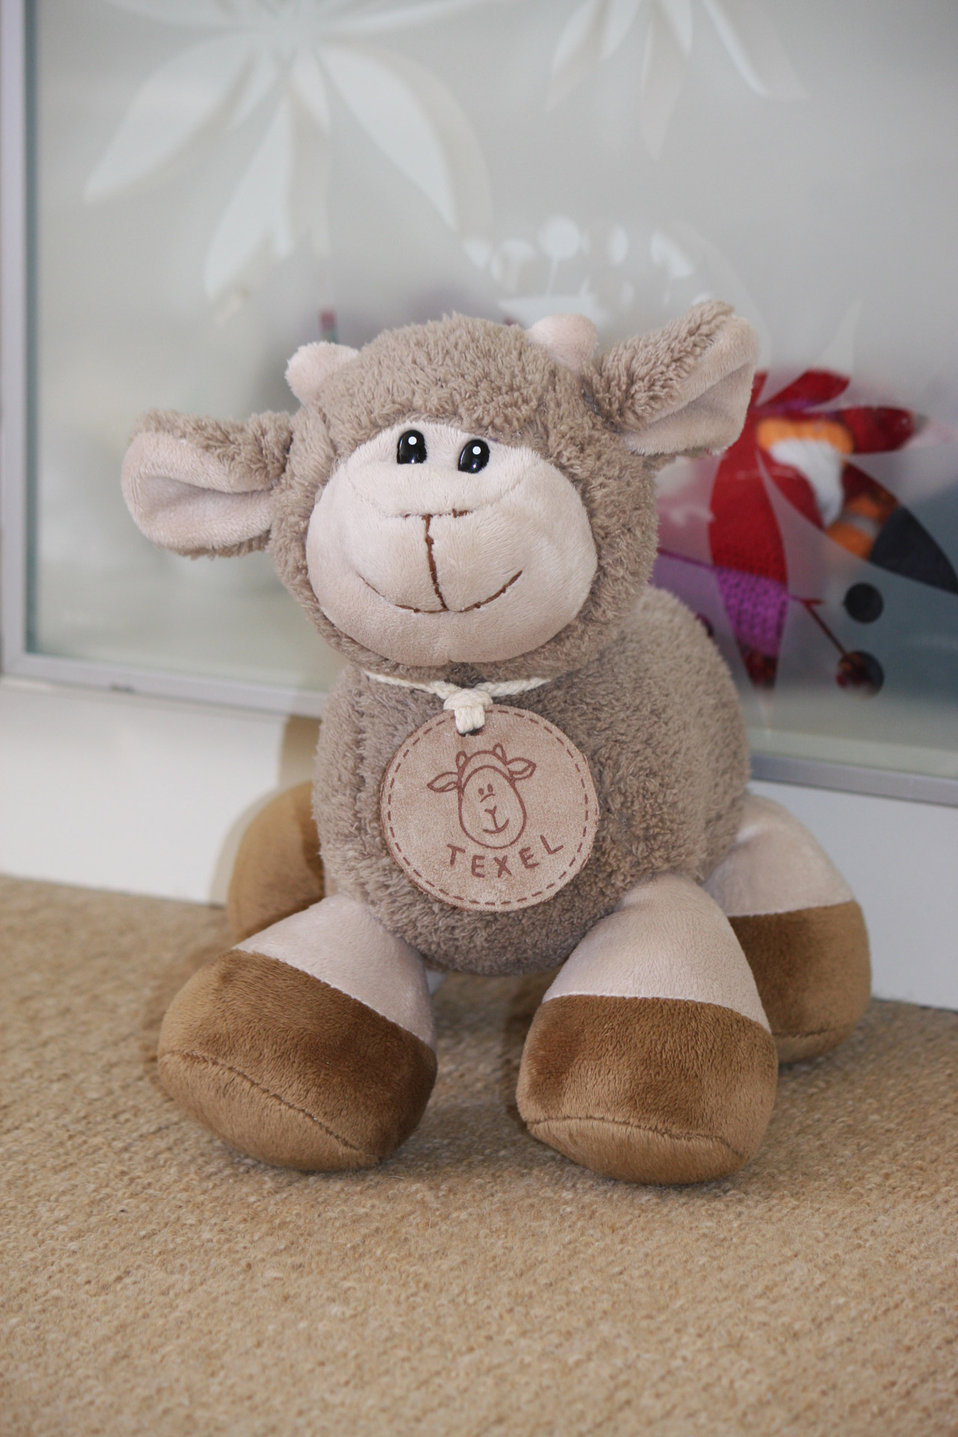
Lamb plush toy

Cute lamb plush toy for kids.